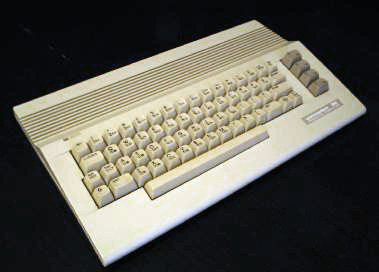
A Commodore C64C